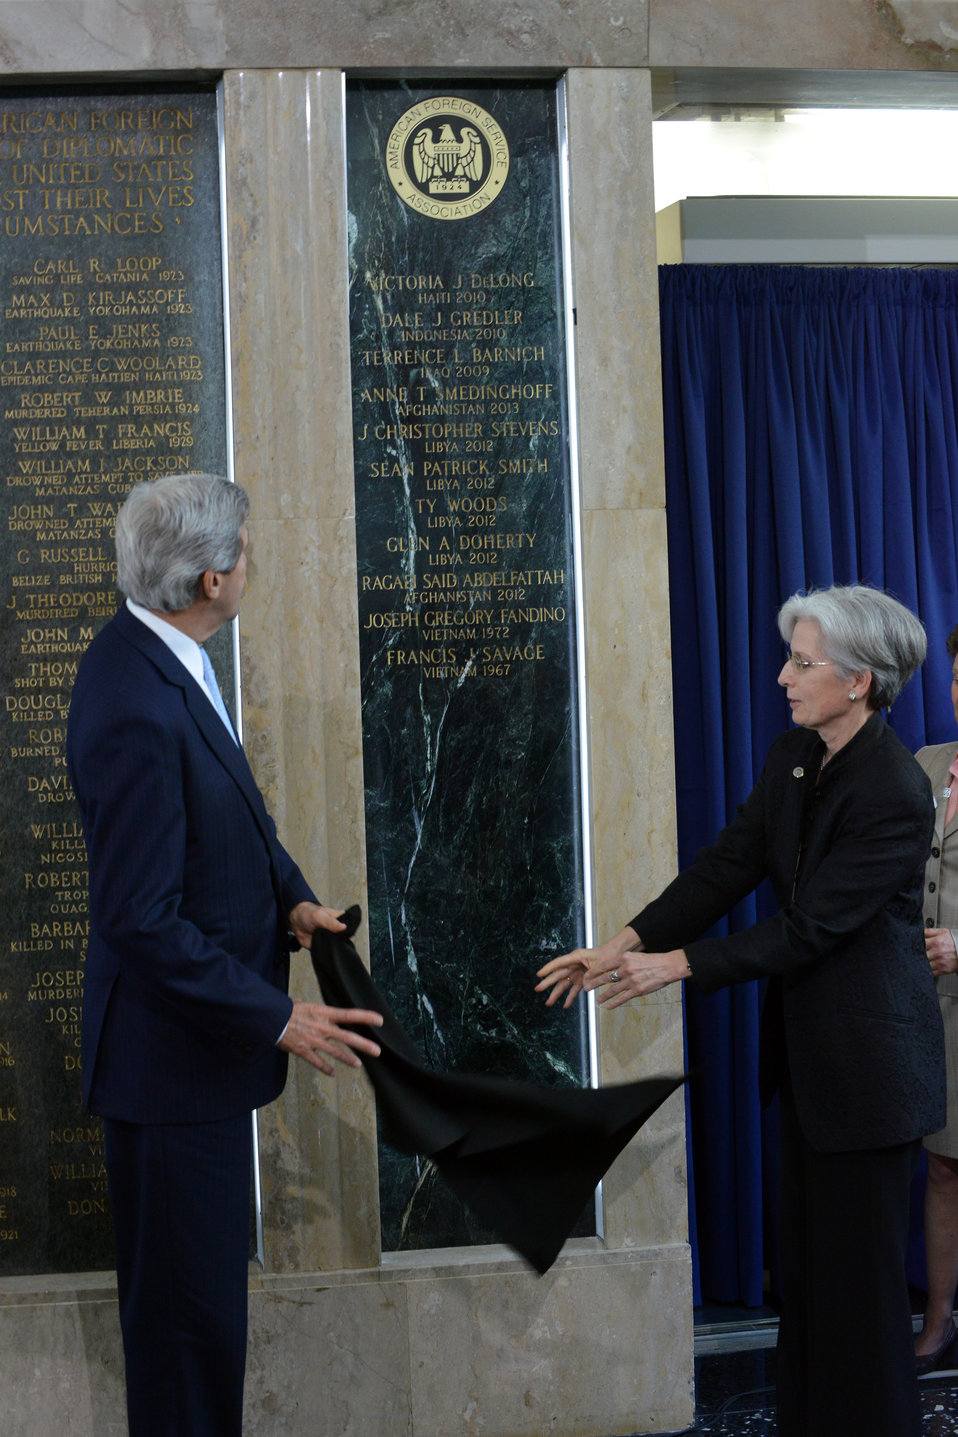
Secretary Kerry and AFSA President Johnson Honor Fallen Foreign Affairs Colleagues

U.S. Secretary of State John Kerry and American Foreign Service Association (AFSA) President Susan R. Johnson honor foreign affairs colleagues, who have lost their lives while serving overseas in the line of duty or under heroic or other inspirational circumstances, at the AFSA Memorial Plaque Ceremony at the U.S. Department of State in Washington, D.C., on May 3, 2013.